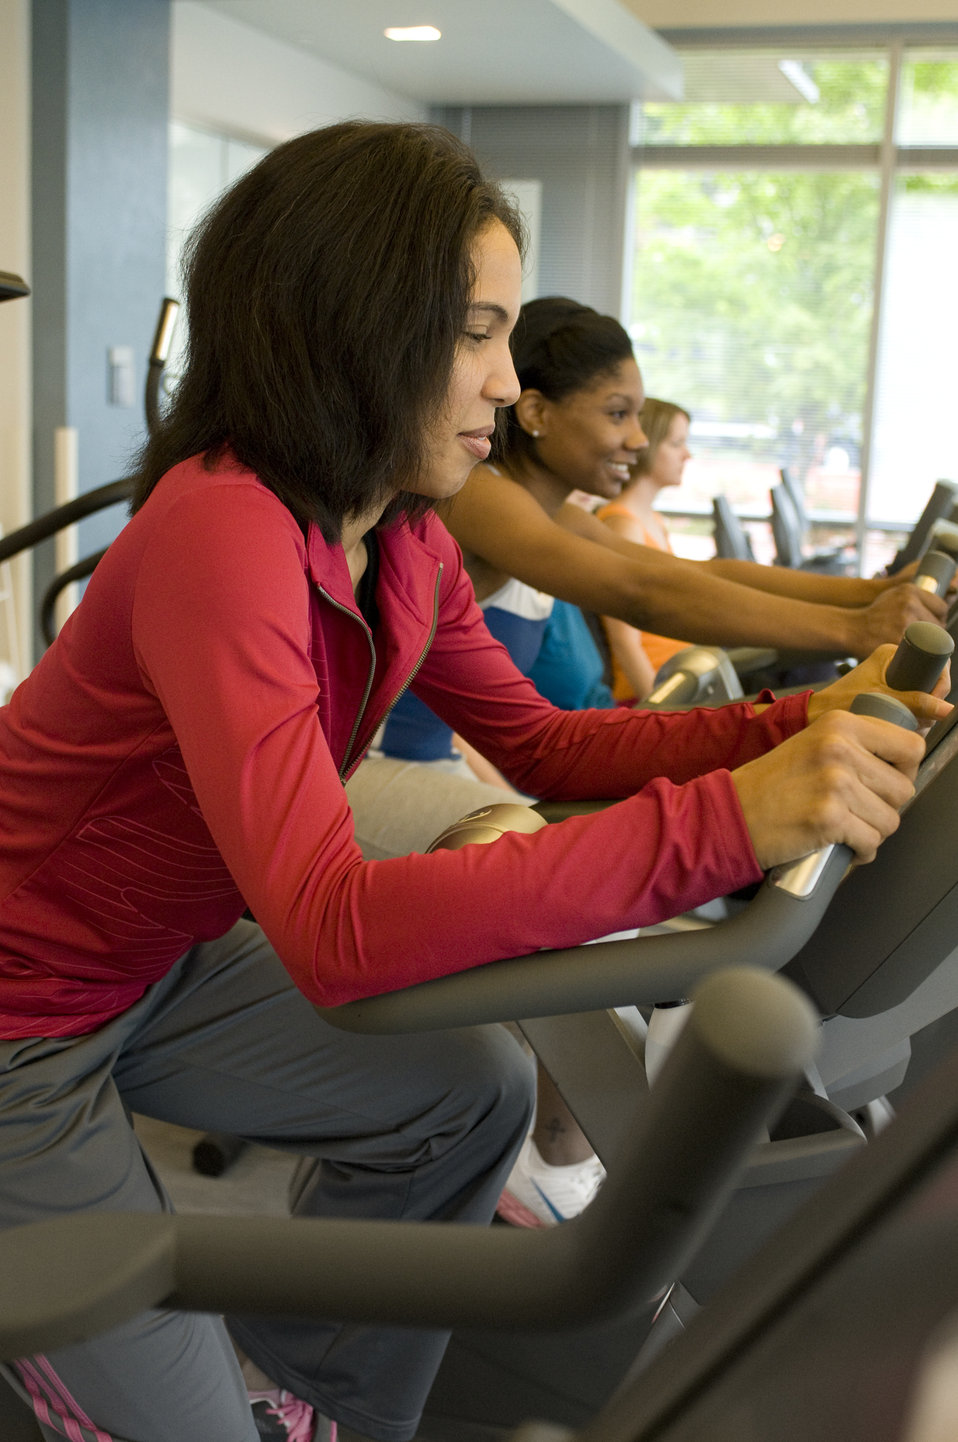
This image was captured on one of the Centers for Disease Control's (CDC) campuses, in the facility's fitness center, where a number of scheduled group classes are provided for employees' health and enjoyment. In this particular view, three women were making use of a the facility's treadmills, taking part in some aerobic exercise.